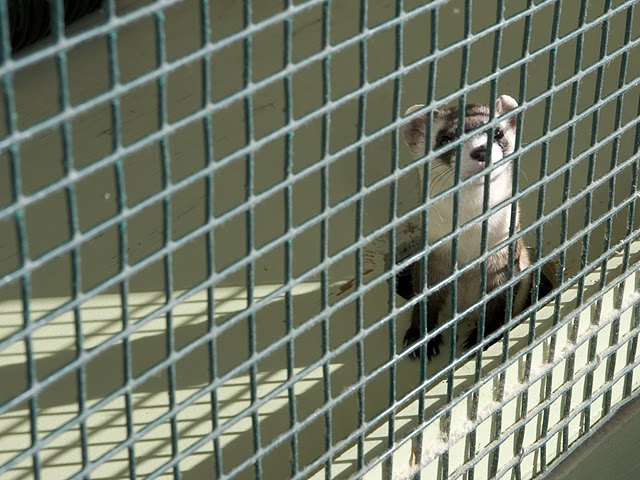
Black-footed Ferret in Cage